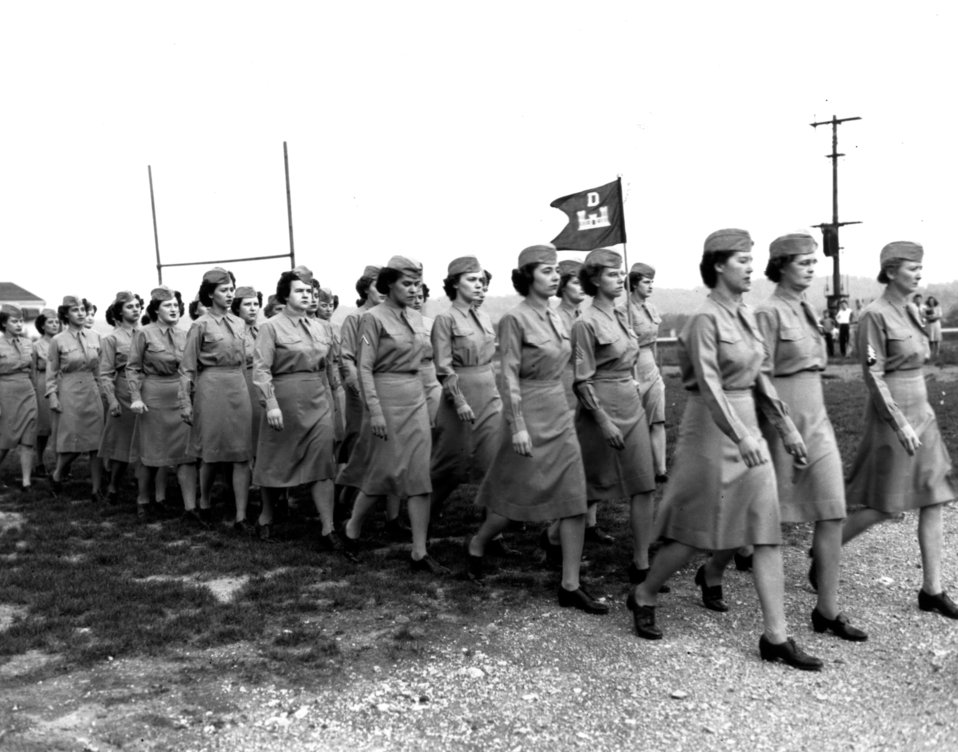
Army Activity at Oak Ridge